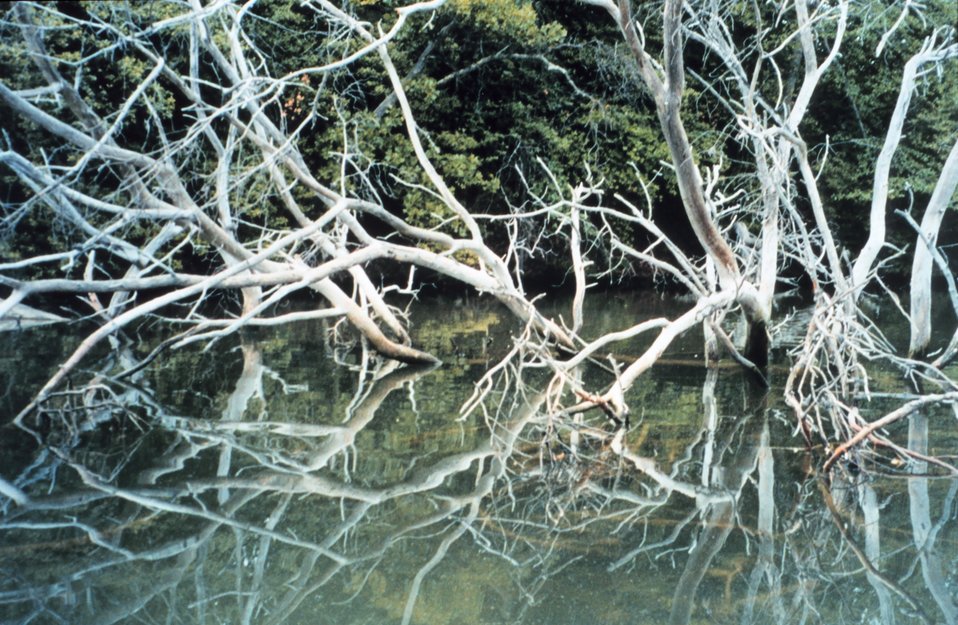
Trees have fallen into the marsh - victims of erosion.